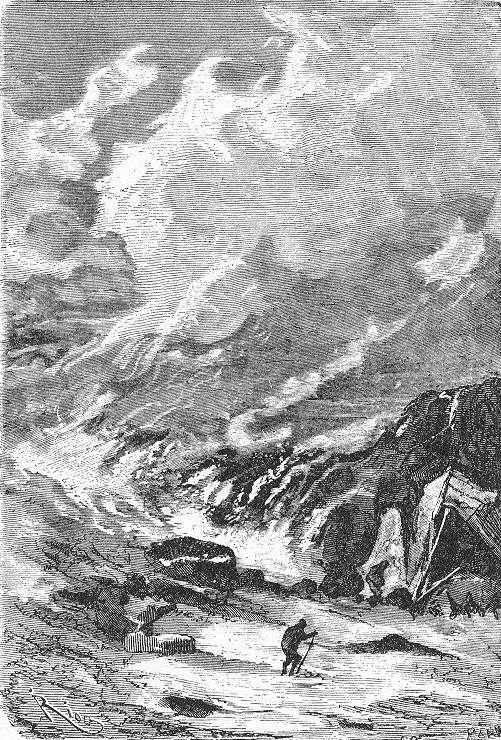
An illustration from Jules Verne's novel 'Journeys and Adventures of Captain Hatteras', part II: 'The Field of Ice' drawn by Édouard Riou and/or Henri de Montaut. Polski: Ilustracja powieści Juliusza Verne'a 'Podróże i przygody kapitana Hatterasa', części II: 'Pustynia lodowa' autorstwa Édouarda Riou i/lub Henri de Montauta. Français : Jules Verne: 'Voyages et aventures du capitaine Hatteras - Le désert de glace', Édouard Riou et Henri de Montaut.